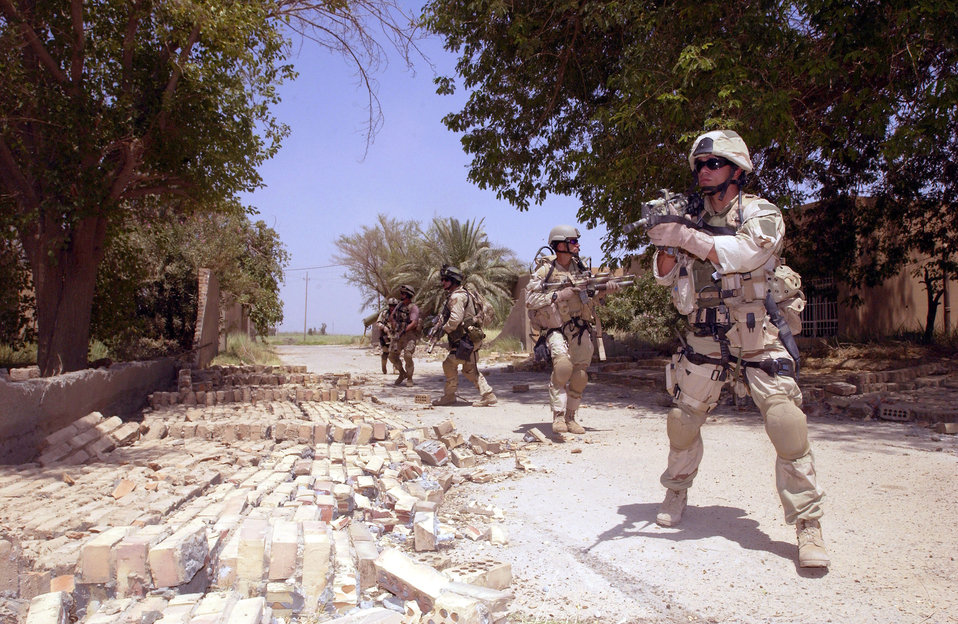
Walk this way

OPERATION IRAQI FREEDOM -- A pararescue team from Baghdad International Airport performs a team movement exercise through urban streets.